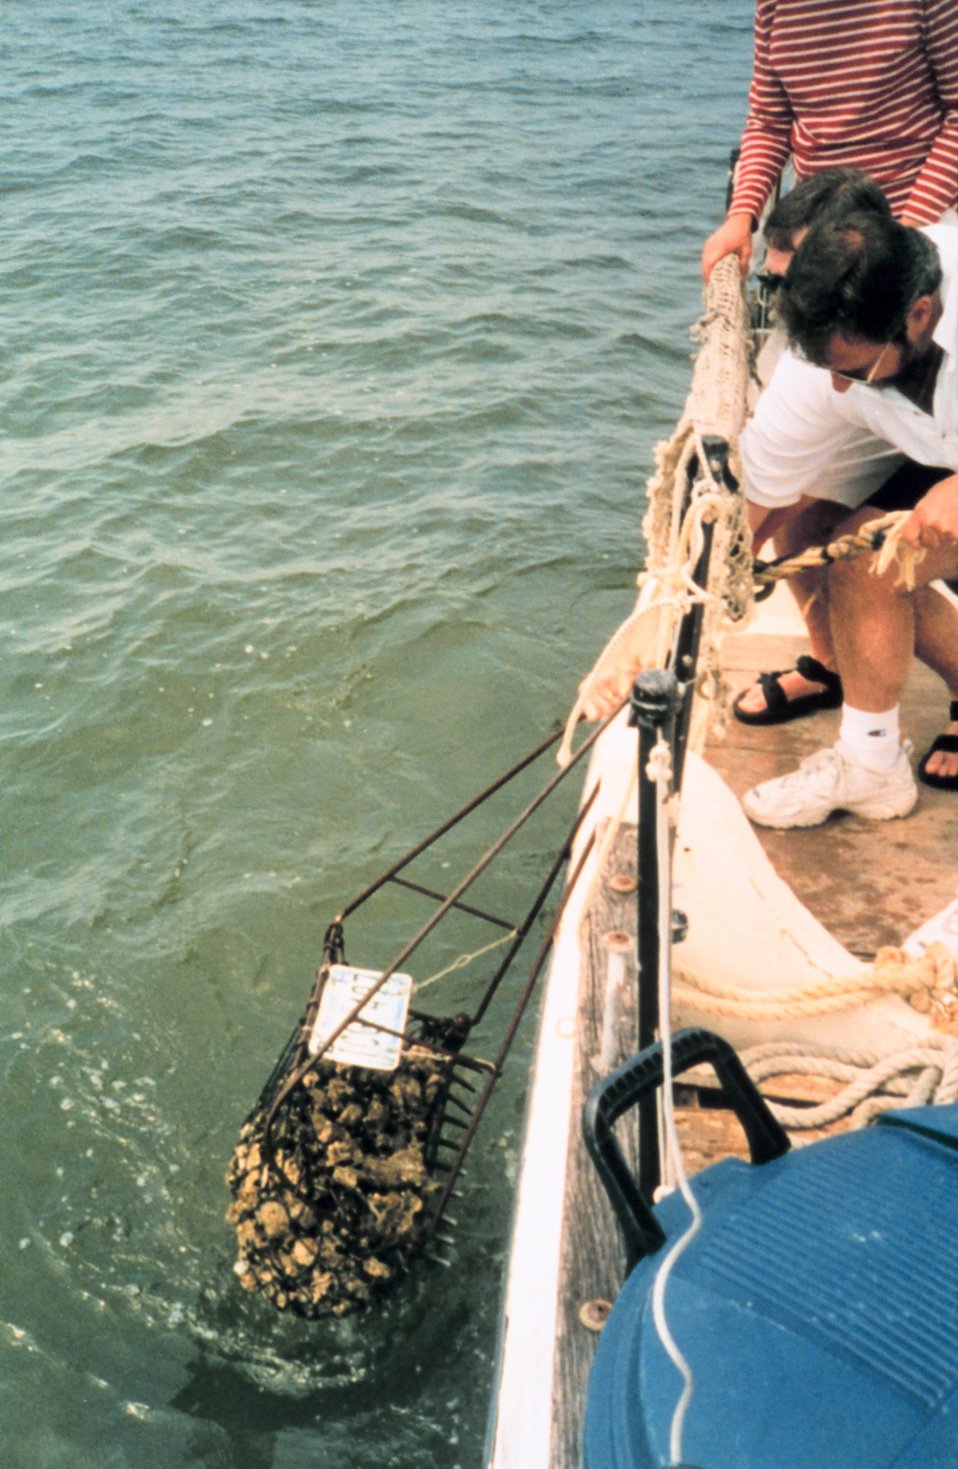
Pulling an oyster-dredge full of oysters aboard the skipjack 'DEE' of St. Mary's